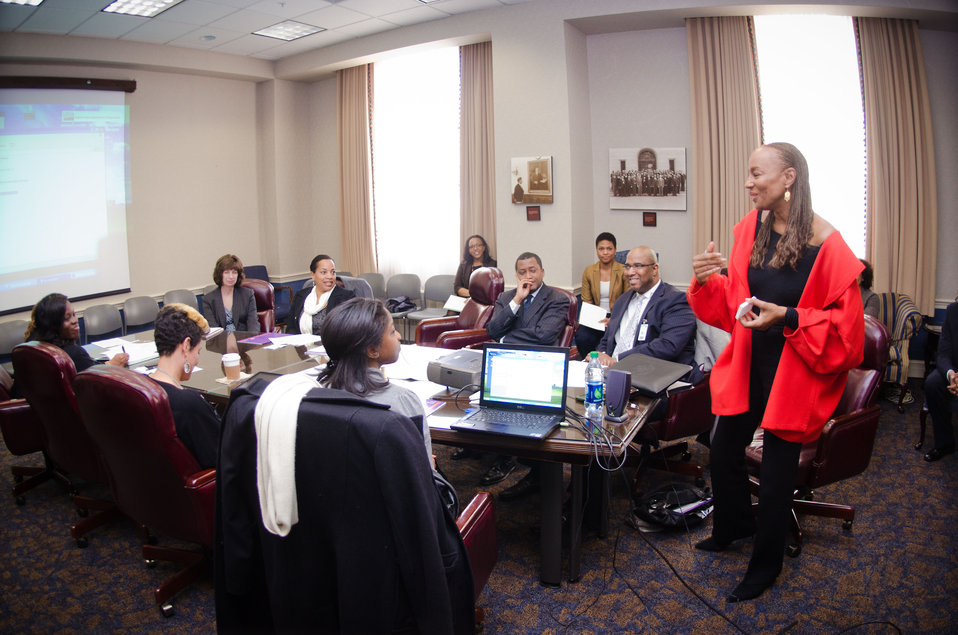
National CARES Mentoring Movement founder and Editor-in-Chief Emeritus, Essence magazine, Susan Taylor (red coat), met for a cross-departmental discussion with Department of Agriculture and Department of Energy personnel in the Whitten Building, U.S. Department of Agriculture, in Washington, D.C., on Tuesday, February 28, 2012. This not-for-profit organization is dedicated to recruiting and connecting mentors with local youth and mentoring organizations to help guide under-resourced children to academic and social success across the country. This discussion provided a continuation of the White House Policy in Action conference that took place in November 2011. The focus of the discussion was about how existing federal programs and administration priorities can be leveraged with her organization, especially as it relates to science, technology, engineering and mathematics (STEM) literacy, education and rural youth.